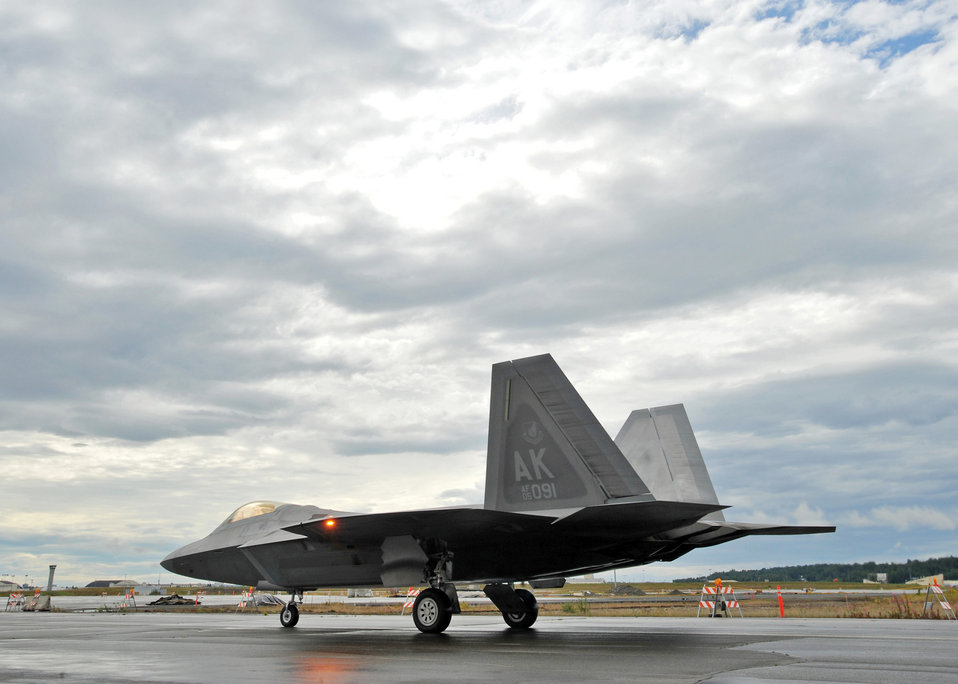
Raptors at Red Flag-Alaska

An F-22 Raptor taxis the runway participating in a Red Flag-Alaska mission July 27 at Elmendorf Air Force Base, Alaska. Red Flag is a Pacific Air Forces commander-based field training exercise for U.S. coalition forces flown under simulated air combat conditions. It provides joint offensive counter-air, interdiction close air support, and large force employment training in a simulated combat environment.